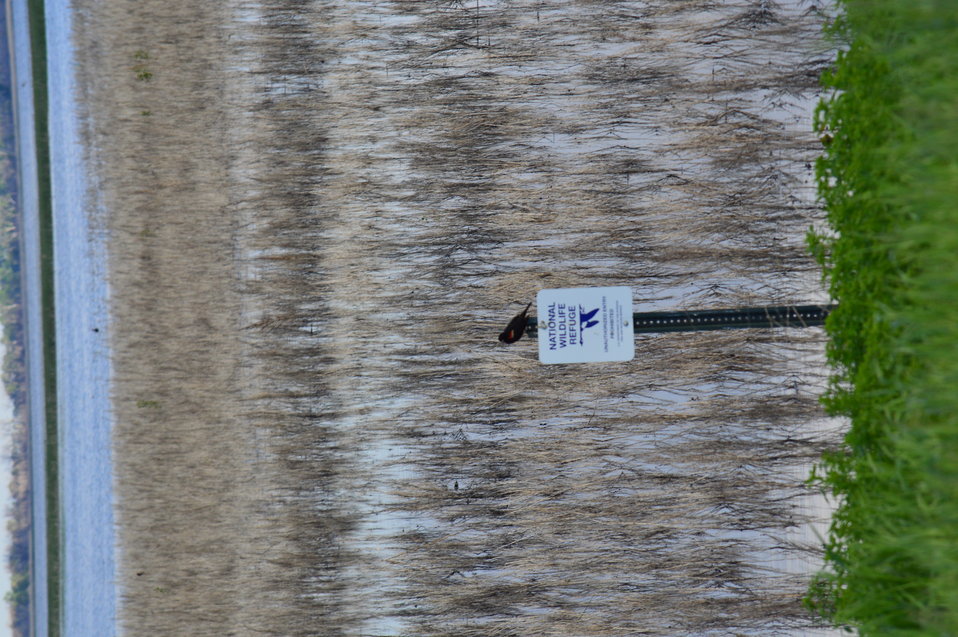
Red-winged blackbird on NWR sign

Scenery and wildlife at Sand Lake National Wildlife Refuge in South Dakota